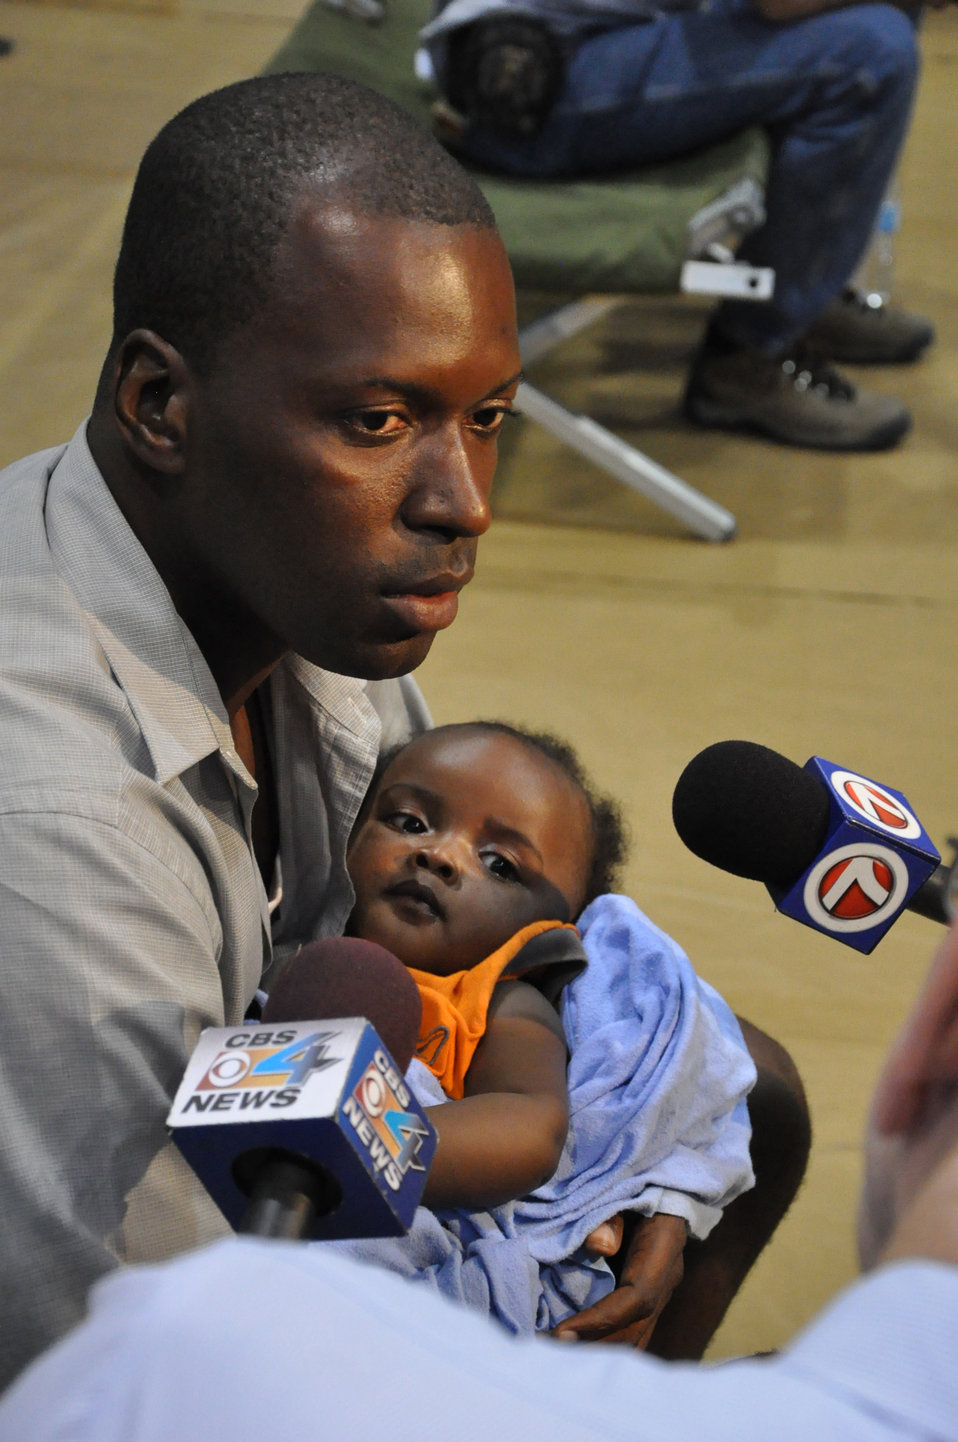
Homestead Air Reserve Base becomes hub for Haitian quake relief efforts

A firestorm of media descended upon Homestead Air Reserve Base after American citizens returned from Haiti aboard a C-130 Jan. 15, 2010. During a Customs and Border check, media documented the varied stories of survival.